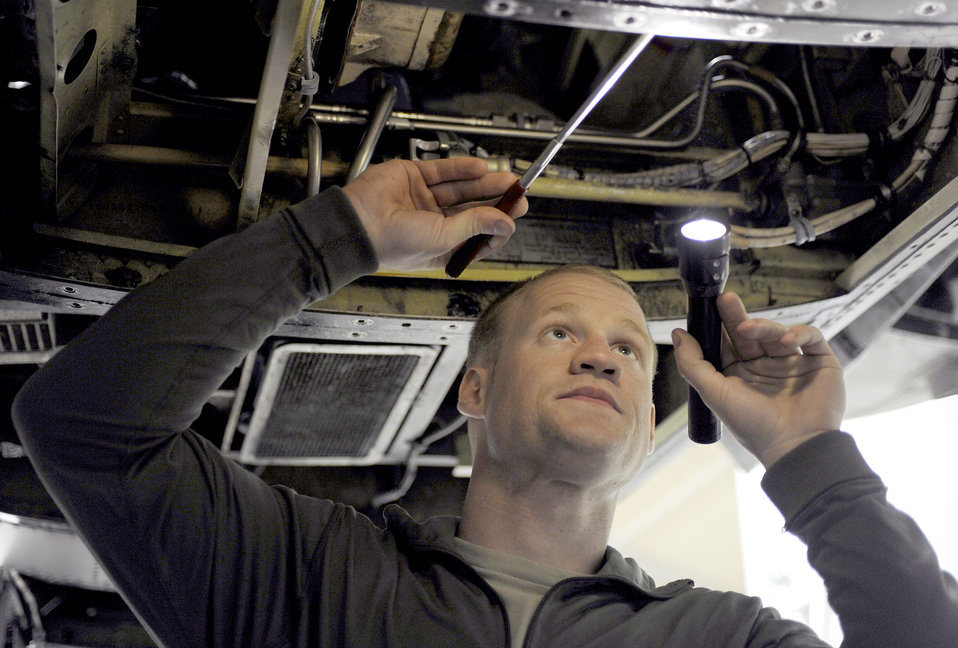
Phase inspections

Senior Airman Austin Strabala inspects the environmental control system compartment for foreign objects prior to a quality assurance inspection Feb. 22, 2011, at Kandahar Airfield, Afghanistan. Airman Strabala is an A-10 Thunderbolt II phase inspection section journeyman assigned to the 451st Expeditionary Maintenance Squadron.